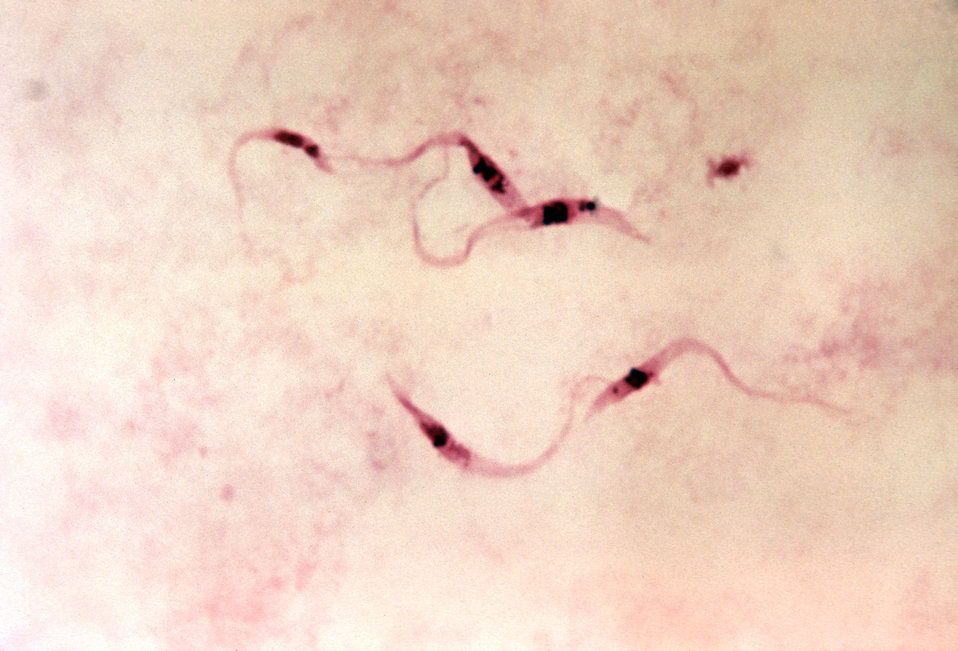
Trypanosoma cruzi, crithidia. Parasite.